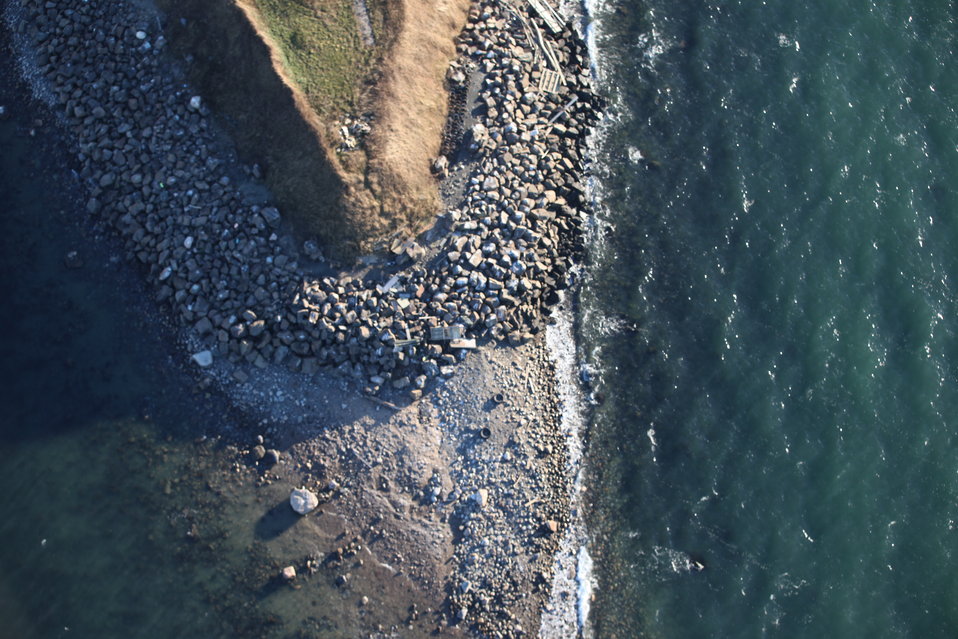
Stewart B. McKinney National Wildlife Refuge-Falkner Island (CT)

Aerial view of Falkner Island in the aftermath of storm Sandy. Affects of the storm can be seen on this end of the island.